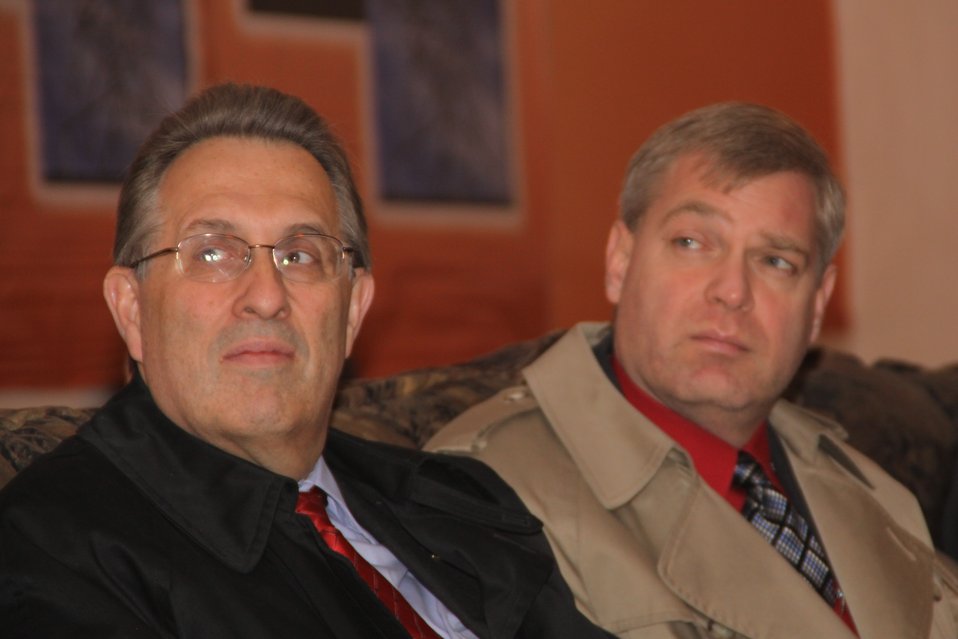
U.S. Ambassador E. Anthony Wayne